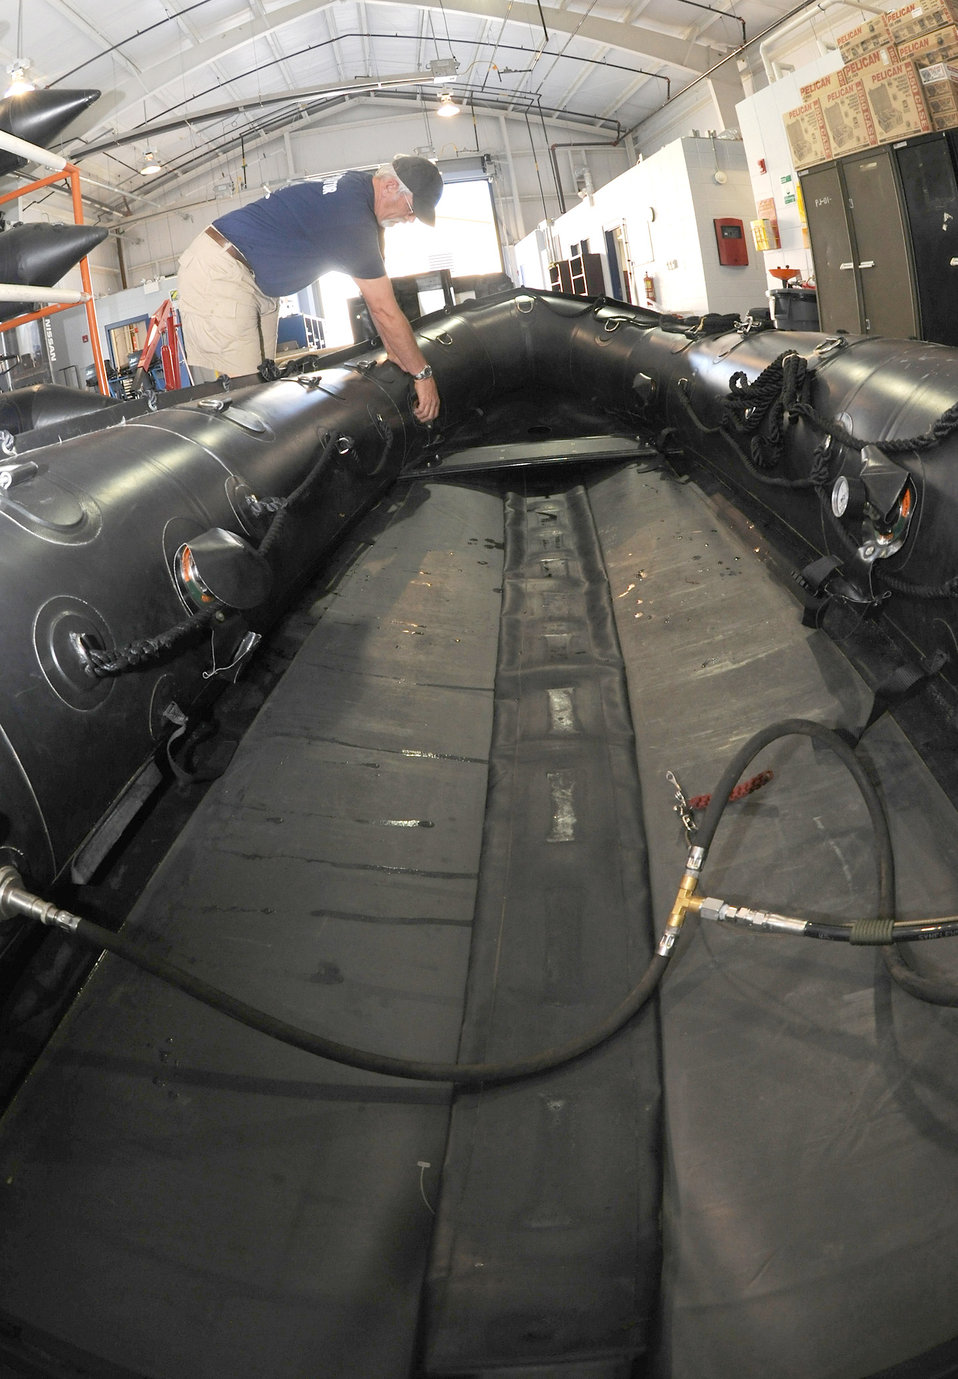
Logistic support

Pat Sinon cleans an F-470 Zodiac inflatable boat after a water training exercise May 12, 2010, at Moody Air Force Base, Ga. The Zodiac inflatable boat is used for water operations by the 38th RQS. Mr. Sinon is a 38th Rescue Squadron logistics flight boat master.